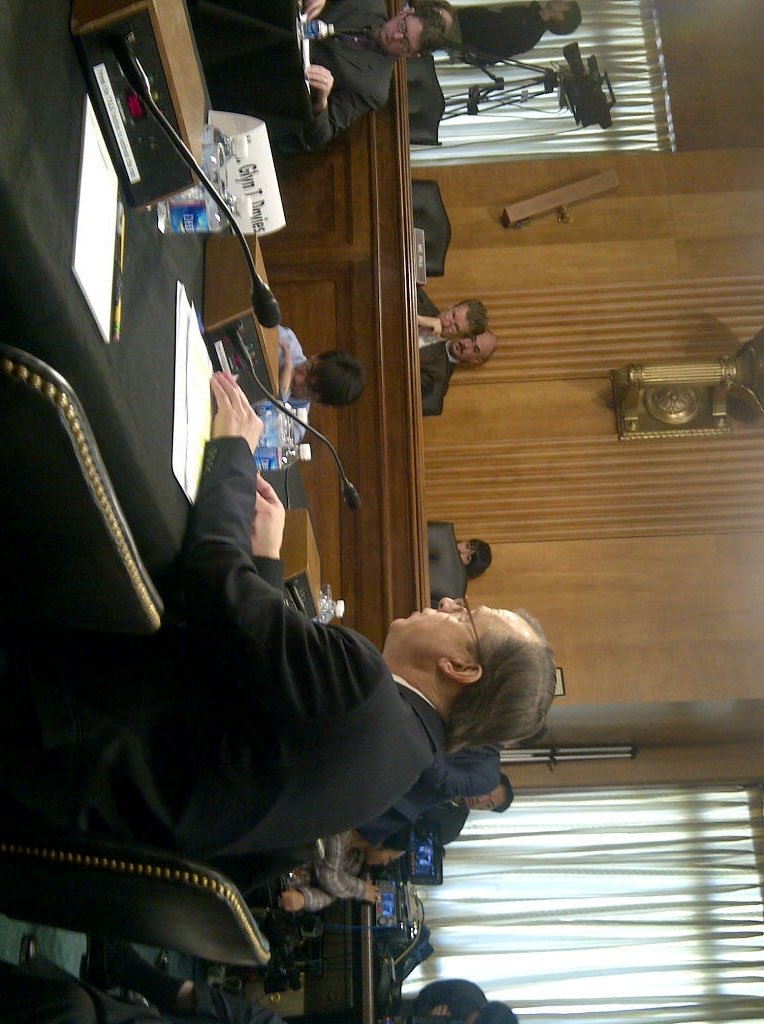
Special Representative Davis Testifies Before the Senate on North Korea

Special Representative for North Korea Policy Glyn Davies testifies before the Senate Committee on Foreign Relations on U.S. Policy Toward North Korea on Capitol Hill in Washington, D.C., on March 7, 2013.